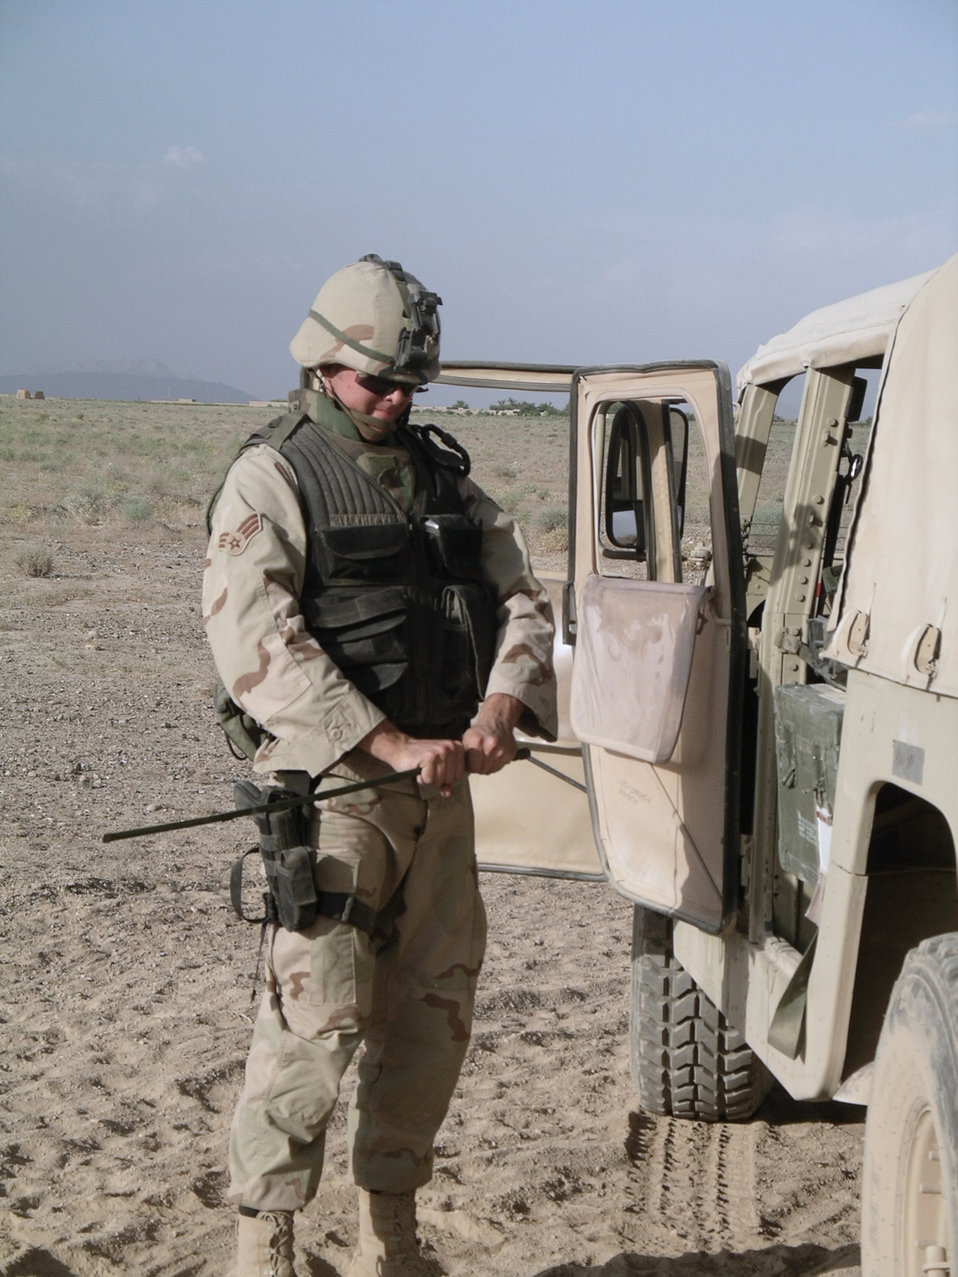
EOD Airmen work to keep Kandahar safe

KANDAHAR AIRFIELD, Afghanistan -- Senior Airman David Gerig assembles a remote fire device before a controlled detonation here. He is assigned to the 451st Air Expeditionary Group's explosive ordnance disposal flight and is deployed from Kadena Air Base, Japan.